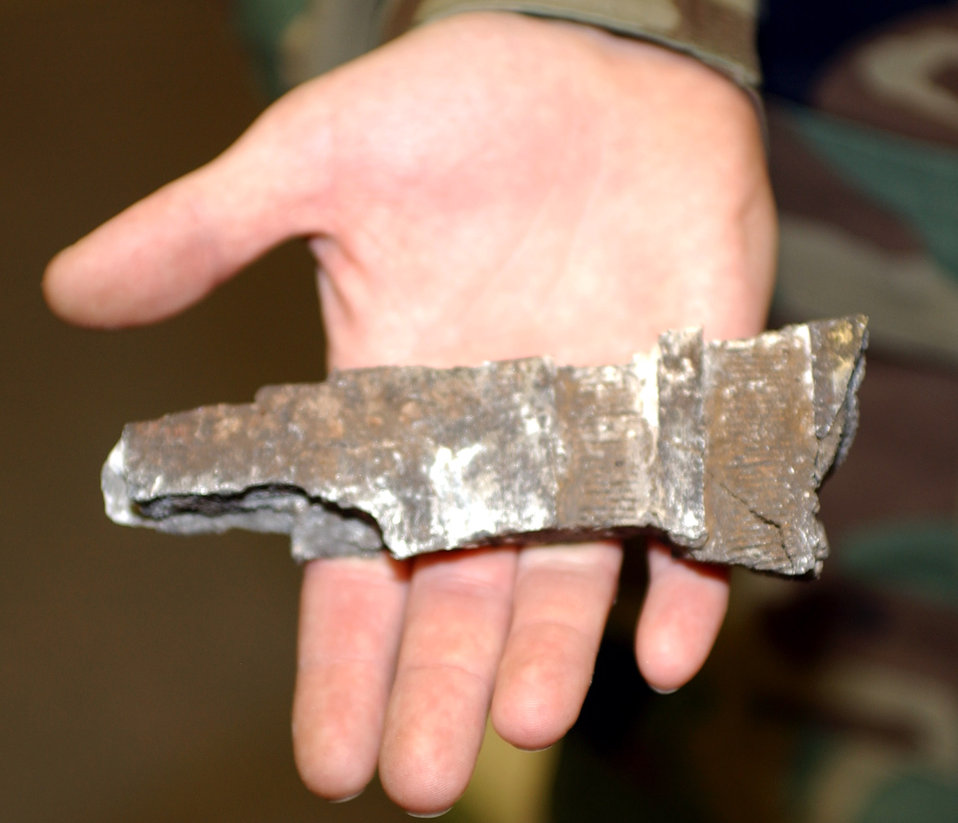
Roadside bombs don't stop NCO from rolling on

Staff Sgt. Chris Lelm holds up a piece of shrapnel from a roadside bomb in Iraq that struck his vehicle during a convoy mission. He was presented the Purple Heart for his wounds. He is assigned to the 319th Logistics Readiness Squadron at Grand Forks Air Force Base, N.D.